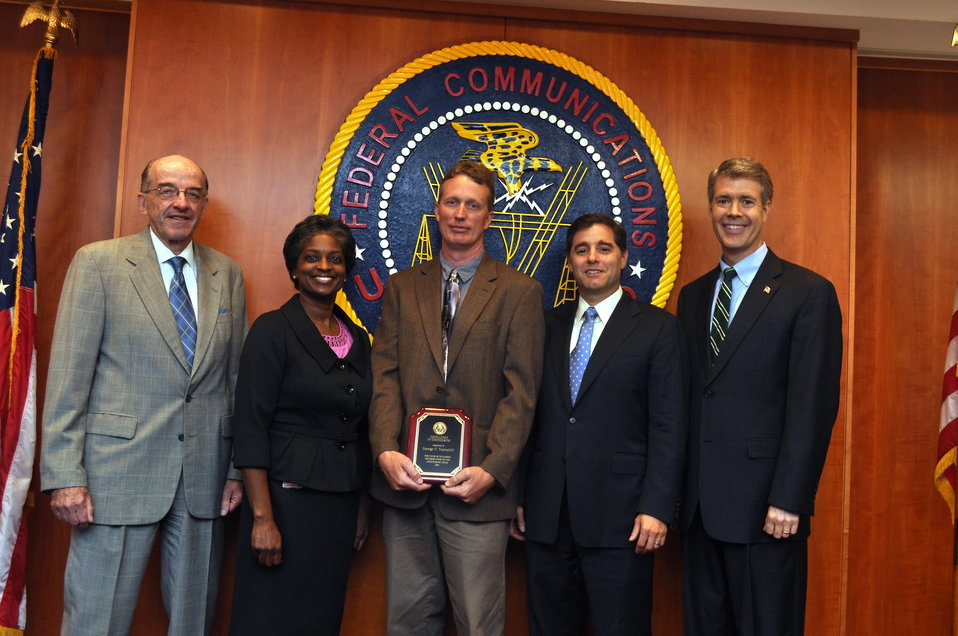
Engineers and Economists

At the August, 2011 Open Meeting the FCC recognized engineers and economists.